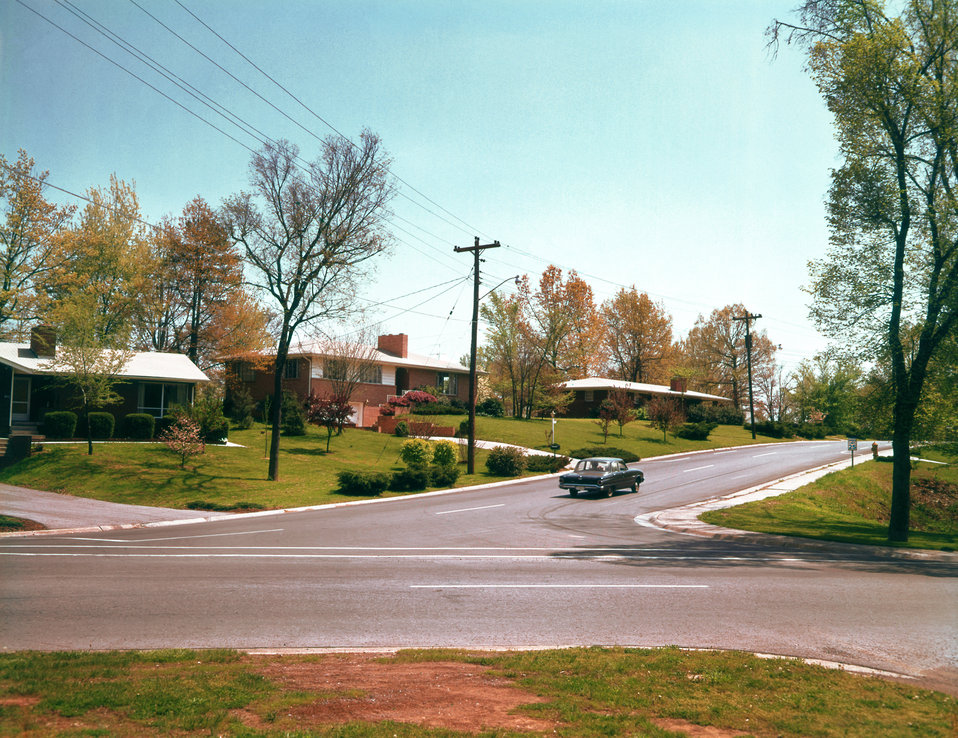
Oak Ridge Residential Area

DOE photo by Ed Westcott 1960s Oak Ridge Tennessee